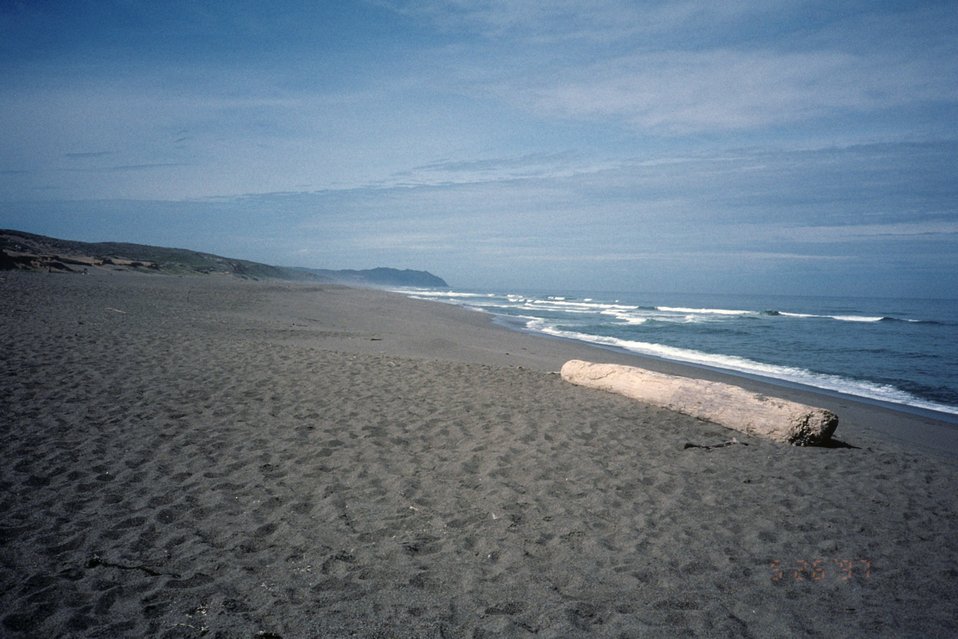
Point Reyes Great Beach south end. Looking south toward Point Reyes.